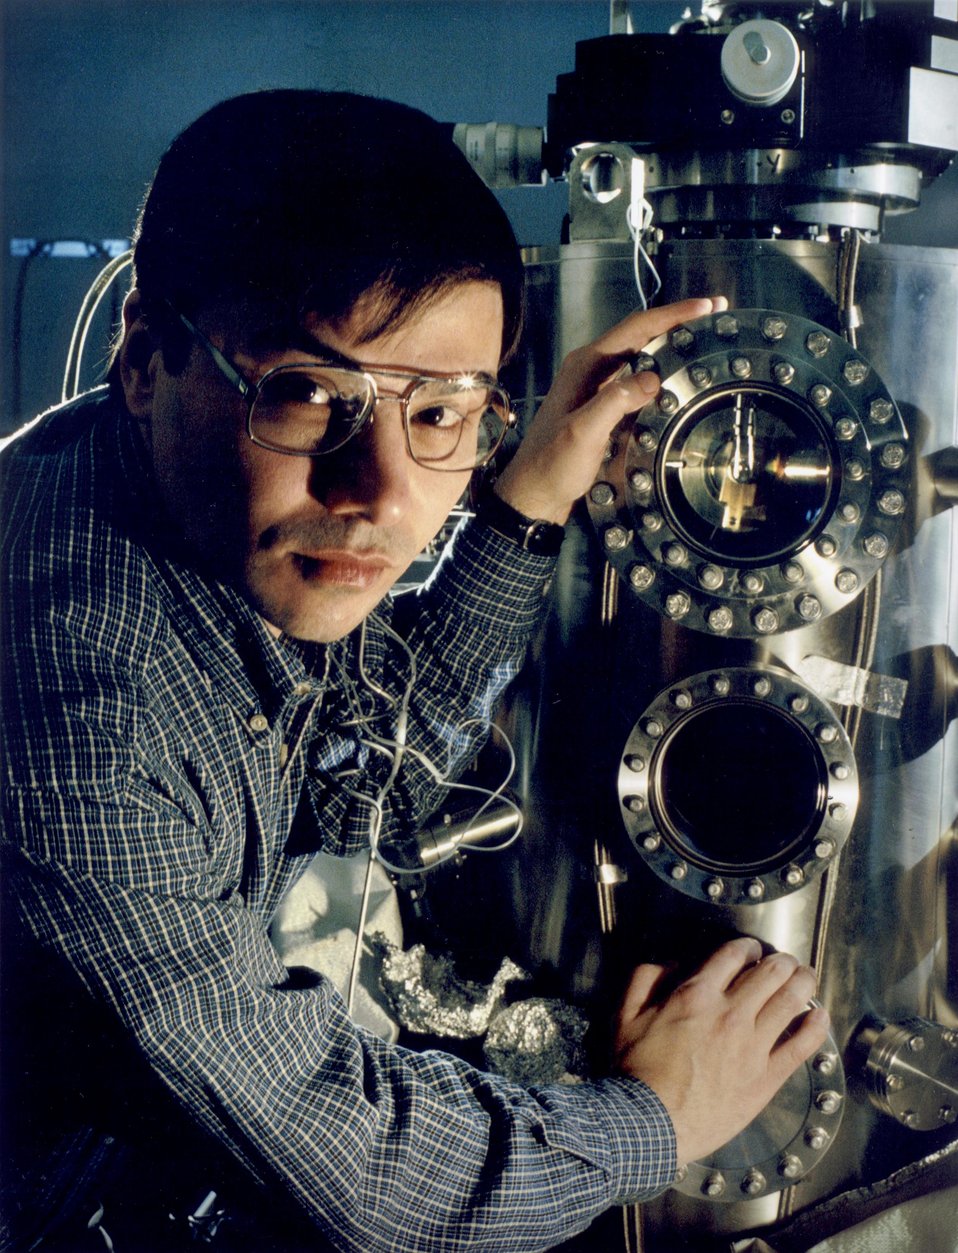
TEAM OF BNL CHEMISTS HEADED BY J. RODRIGUEZ DEVELOPED CATALYSTS TO DESTROY SULFUR DIOXIDE.

WHEN FOSSIL FUELS ARE BURNED, SULFUR IMPURITIES WITHIN THE FUELS BECOME SULFUR DIOXIDE, A MAJOR POLLUTANT AND SOURCE OF ACID RAIN. INDUSTRY USES METAL-OXIDE CATALYSIS IN CATALYTIC CONVERTERS AND SMOKESTACK SCRUBBERS TO HELP KEEP SULFUR POLLUTANTS OUT OF THE ATMOSPHERE. BNL IN COLLABORATION WITH INDUSTRY, DEVELOPED CATALYSTS THAT DESTROY SULFUR DIOXIDE MORE EFFECTIVELY, WITHOUT HEALTH OR ENVIRONMENTAL HAZARDS.